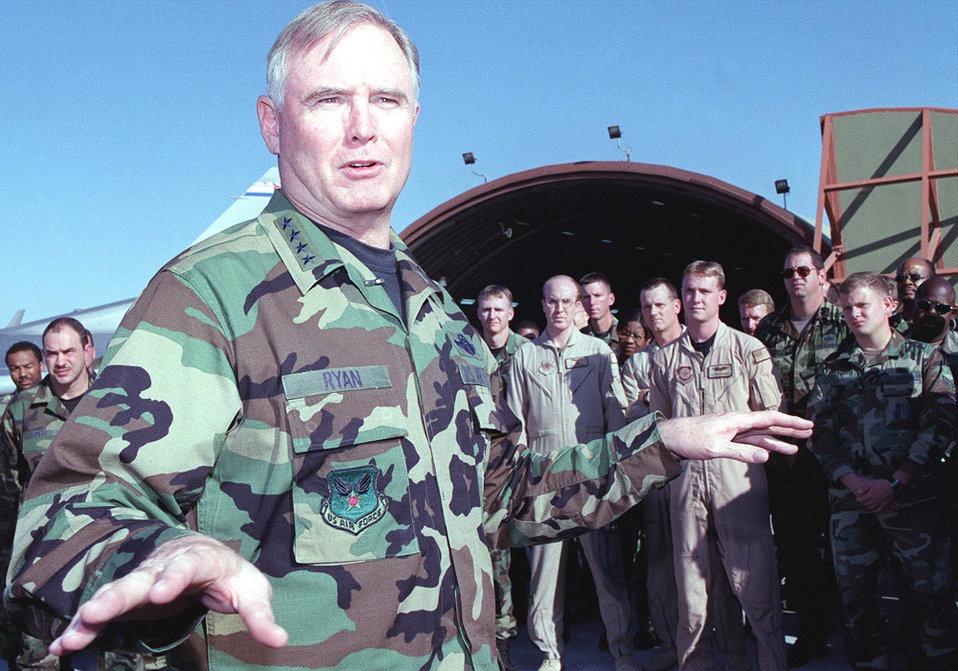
Turkey Day in Turkey

INCIRLIK AIR BASE, Turkey -- Air Force Chief of Staff Gen. Michael Ryan addressed several Air Force issues Nov. 23, 2001, when he visited here, to spend the Thanksgiving holiday with airmen from the 39th Wing and people deployed there to support Operation Northern Watch.